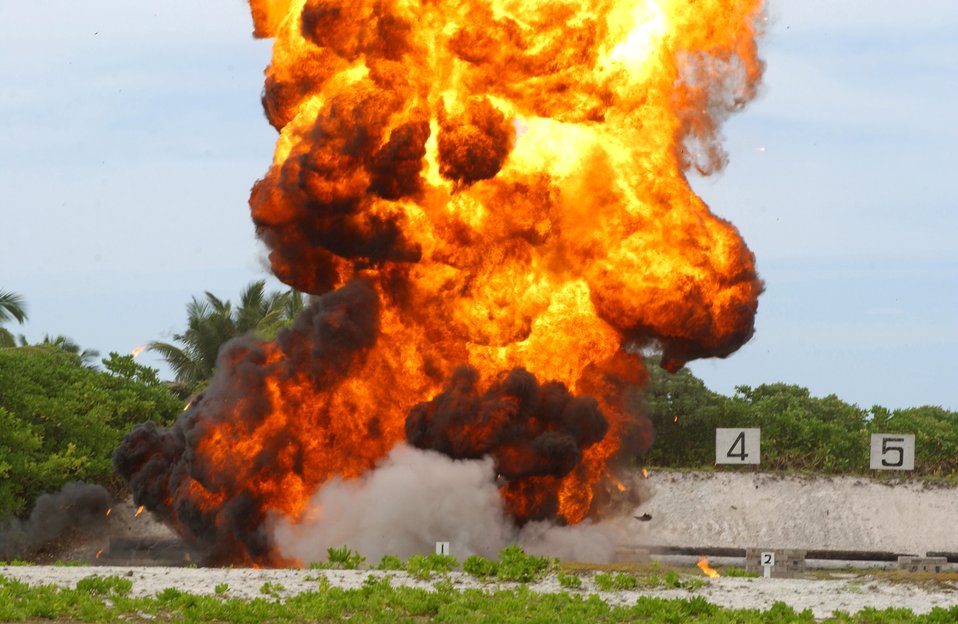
Initial success or total failure; no in between for EOD

OPERATION ENDURING FREEDOM -- A van loaded with C-4 explodes as part of a firepower demonstration at a forward-deployed location. Airmen with the 40th Expeditionary Civil Engineer Squadron's explosive ordnance disposal flight participated in the demonstration along with security forces Airmen and British royal marines.